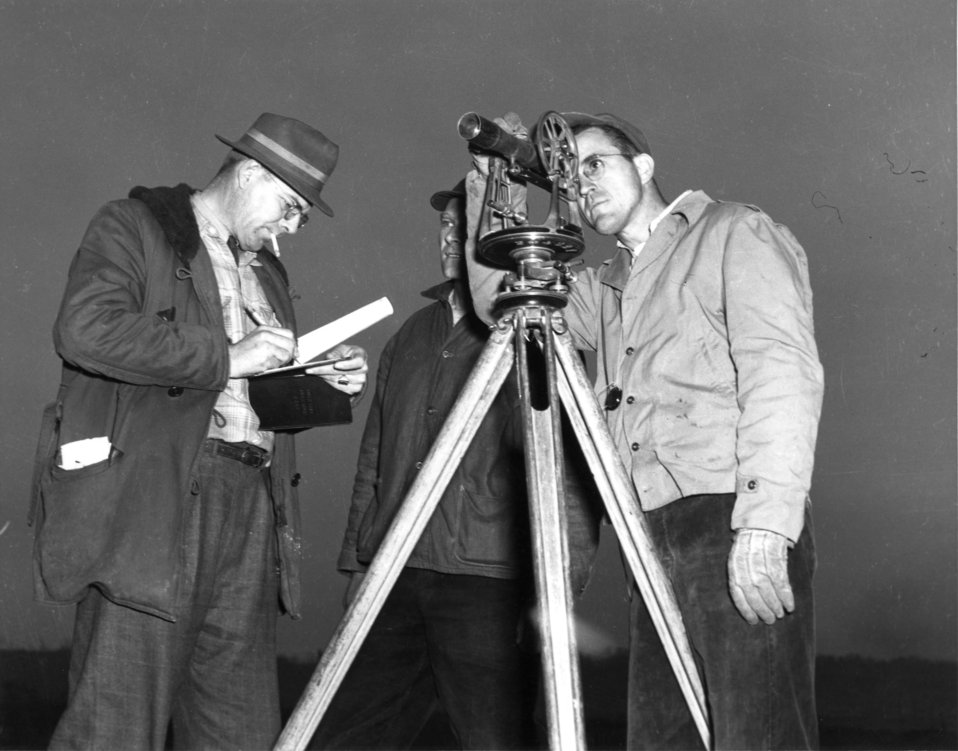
Construction activity at Oak Ridge